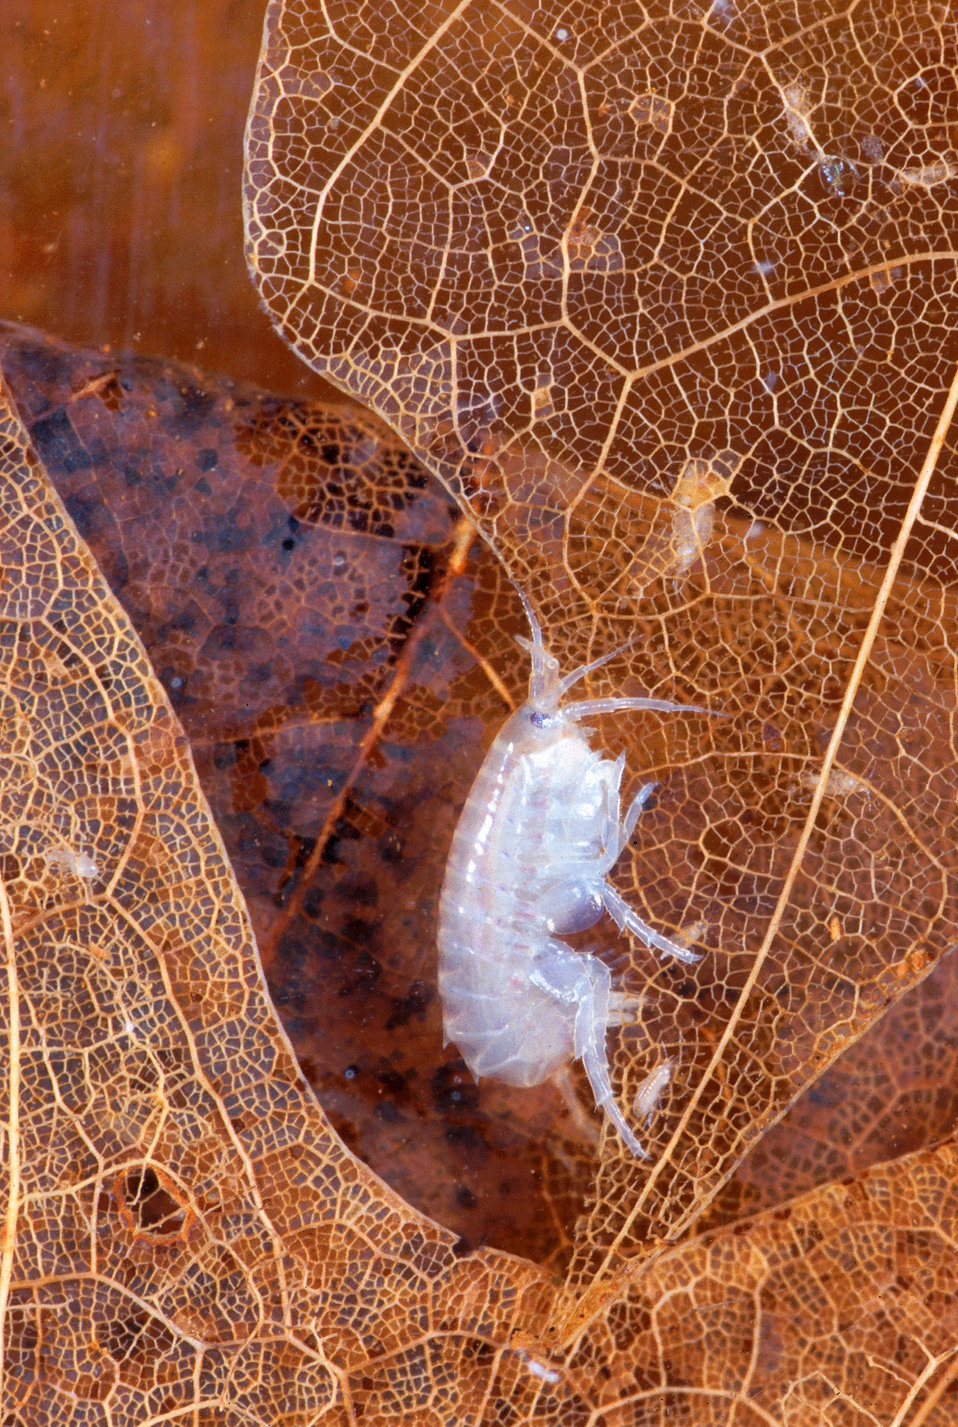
This 1/4-inch-long crustacean (Hyalella Azteca) is common in aquatic systems and is used by scientists as an indicator of environmental health and water quality in streams, lakes, and other bodies of water.